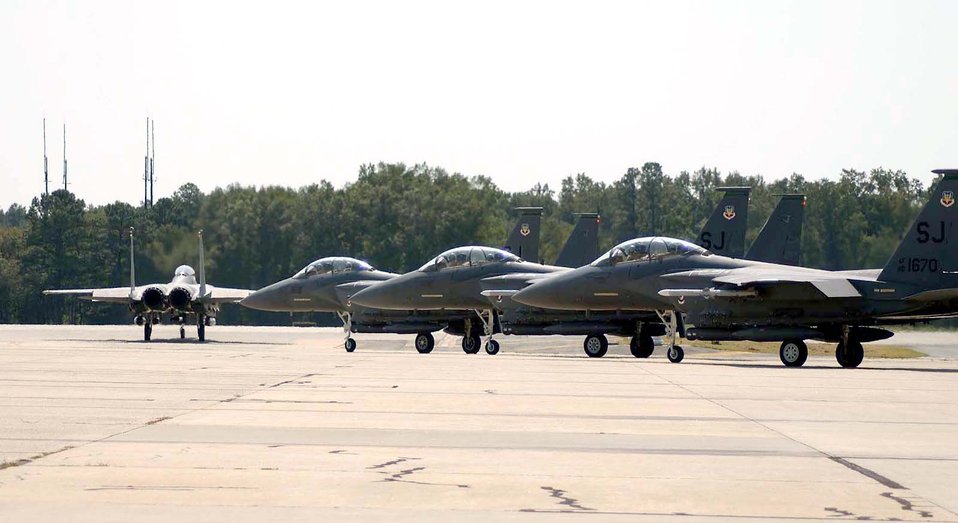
Strike Eagles leave

SEYMOUR JOHNSON AIR FORCE BASE, N.C. -- Four F-15E Strike Eagles from the 4th Fighter Wing here taxi out Sept 16. They are being flown to Tinker Air Force Base, Okla., in preparation from the arrival of Hurricane Isabel.